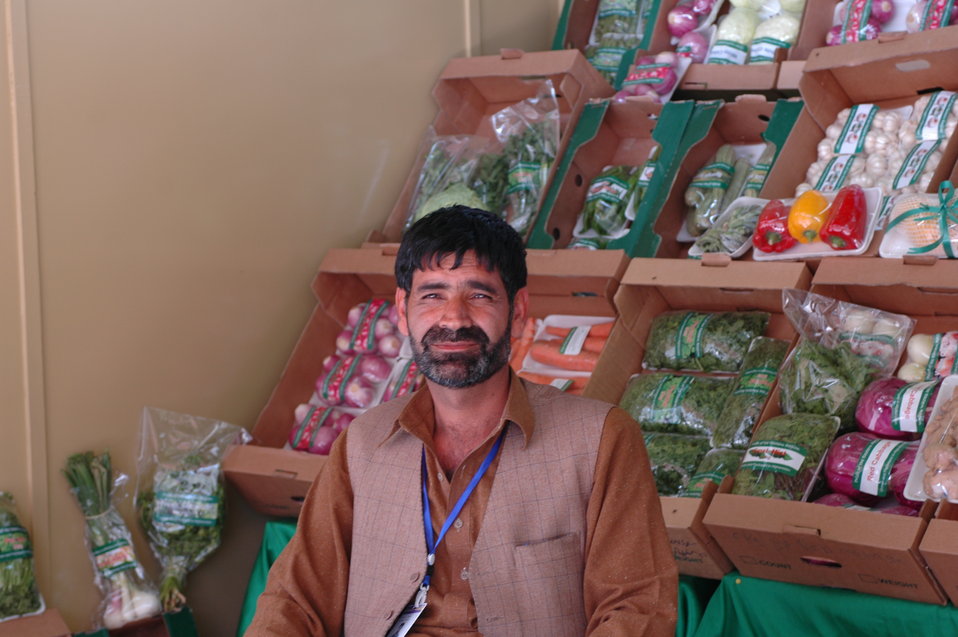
AgFair produce seller

On May 20, 2009, Ambassador Eikenberry joined government officials, farmers, agribusiness representatives, and international investors at the launch of the Kabul International AgFair on May 20. Held at the Ministry of Agriculture, Irrigation and Livestock’s Badam Bagh Demonstration Farm in Kabul, the fair showcases Afghanistan’s wealth of fresh produce, provides lucrative business opportunities, and demonstrates innovative agricultural technologies. It is expected to attract more than 50,000 participants from May 21-22.

U.S. Ambassador Karl Eikenberry and Afghan Acting Minister of Agriculture, Irrigation and Livestock (MAIL) Saleem Kunduzi gave opening remarks at the AgFair’s launch. “The United States Government is co-sponsoring national and regional AgFairs like this one to encourage trade and generate business opportunities in the agriculture sector,” Ambassador Eikenberry said. “In a country that is 80 percent rural, promoting licit crops and agriculture sector job creation are two essential steps to successful development in the region.”

Member of Parliament Abdul Salam Qazizada offered bold remarks, stating that we need to engage more with farmers in every province throughout the country.

Following the ceremony, Ambassador Eikenberry visited a number of vendors at the fair with Acting Minister Kunduzi and Mr. Qazizada. In speaking with farmers displaying their produce, Ambassador Eikenberry found that many have increased yields due to USAID assistance, have found regional buyers for their produce, and were grateful for the opportunities that AgFair provides.

Ambassador Eikenberry also discussed the state of agriculture with Minister Kunduzi and Mr. Qazizada. They agreed that while some progress has been made, there is a great deal more work to be done. Ambassador Eikenberry reiterated from his speech that USDA Secretary Vilsack recently met with Minister Rahimi to discuss the U.S. commitment to agriculture development. In a message to the Afghan public, Secretary Vilsack stressed that the USG aims to play a leading role by bringing more agriculture experts to the provinces and supporting agriculture research such as the Badam Bagh Demonstration Farm. Additionally, he looks “forward to working together to increase agricultural productivity, which will result in more jobs throughout the entire value chain, and a better quality of life for the citizens of Afghanistan.”

The United States Government is proud to support Afghan agriculture. Since 2002, America has provided more than 1 billion dollars in assistance to agriculture and rural development. AgFairs like the one Ambassador Eikenberry visited creates awareness of Afghanistan’s expanding agricultural sector, promotes new agricultural technologies that increase productivity, and provides a forum to connect farmers to local and international buyers. These results will contribute to Afghanistan’s prosperity.

We are already seeing the results of these fairs. Since 2007, Afghanistan’s agricultural fairs have attracted more than 500,000 participants from across the nation and the world, generated millions of dollars in sales of the country’s high-value produce, and provided participants with a competitive edge in one of the fastest growing markets in Central Asia.

As Ambassador Eikenberry stated, “The word is out – with over 180 international businesses represented at this fair, it is obvious that Afghanistan has sparked the interest, and appetite, of the world.”